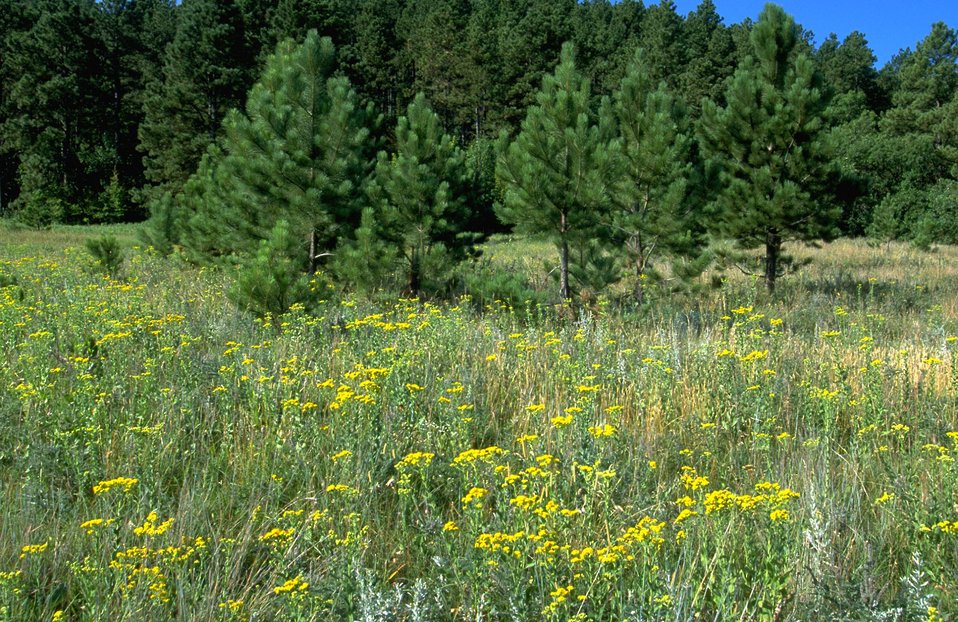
Grassland with Ponderosa Pine in background